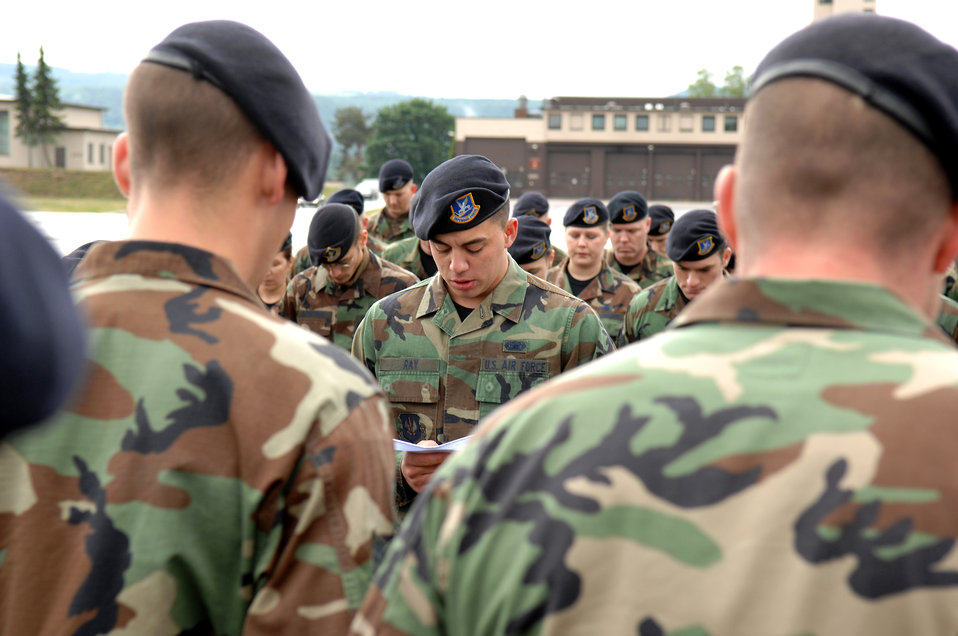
Ramstein security forces honor fallen comrades

Airman Christopher Ray reads the security forces prayer in respect to fallen Airman during the Last Guard Mount ceremony May 16 at Ramstein Air Base, Germany. The Final Guard Mount Ceremony, which recognizes fallen security forces members, was held in conjunction with National Police Week. Airman Ray is a 435th Security Forces Squadron member.